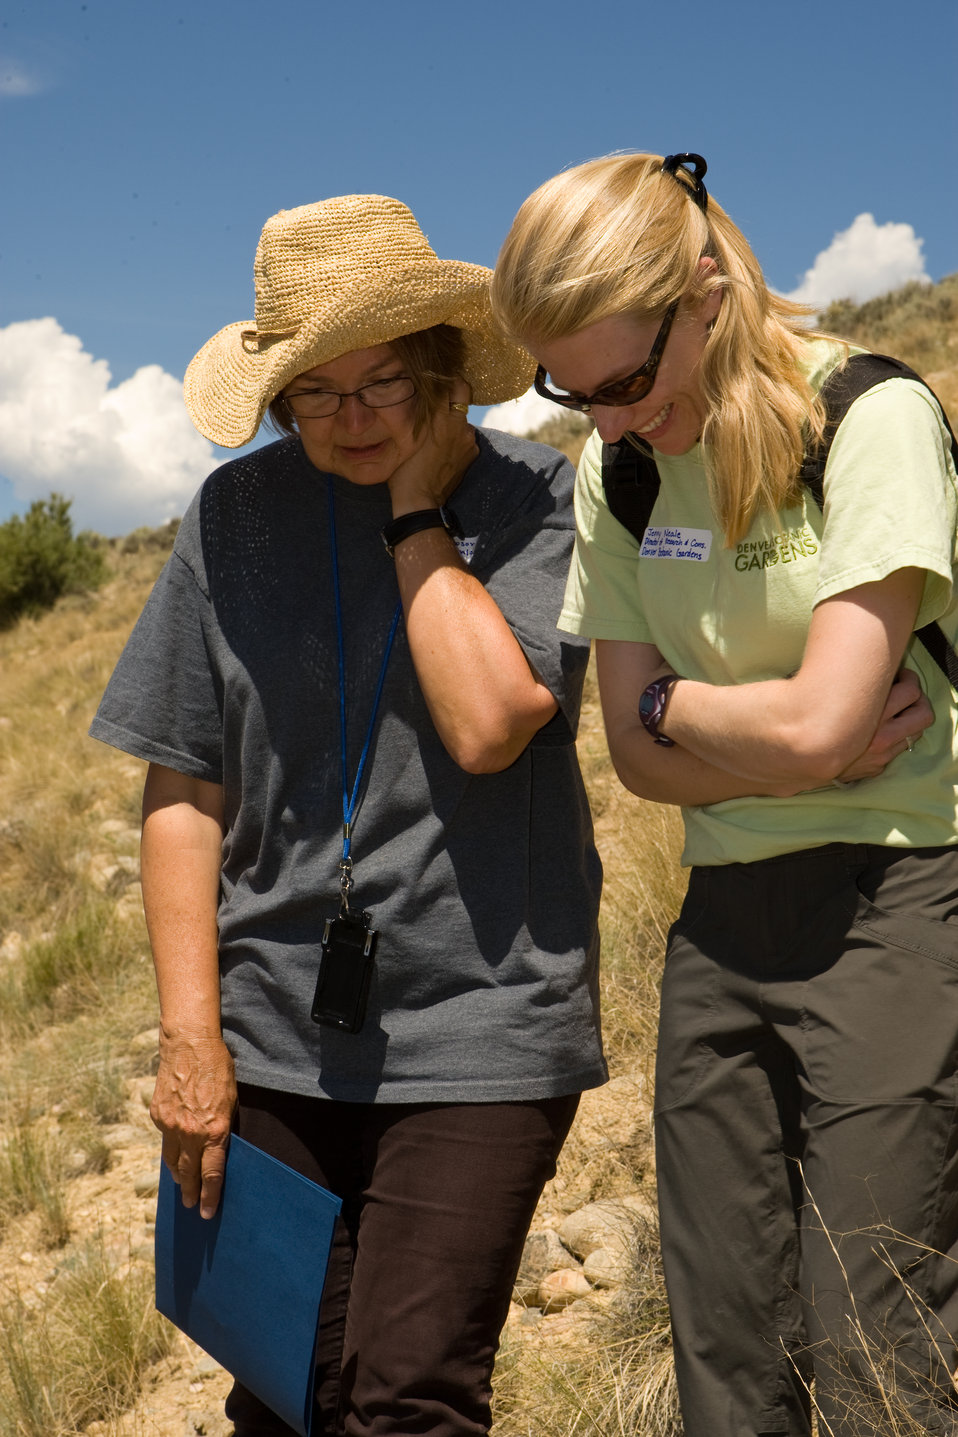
Colorado Rare Plant Conservation Initiative

The Colorado Rare Plant Conservation Initiative (RPCI) is a partnership of 23 statewide and regional agencies, private organizations, and academic institutions working to conserve 121 rare plants in Colorado. As part of these efforts the group developed the Colorado Rare Plant Conservation Strategy, developed Best Management Practices to reduce energy development impacts, addressed climate change, and developed focused strategies for the conservation of individual species at eight priority landscapes. The group has also worked to coordinate volunteer efforts for plant conservation across the state.